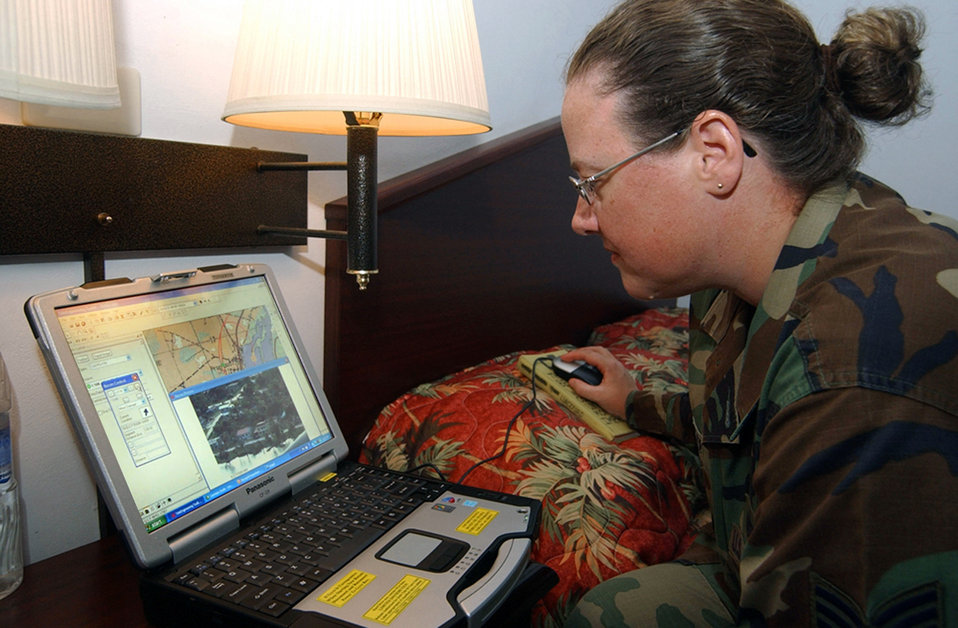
Assessment team arrives in Belize

Tech. Sgt. Heather Prater reviews the video captured after flying on a survey mission to assess damage in Belize City, Belize, caused by Hurricane Dean Aug. 21. Sergeant Prater is here with approximately 20 U.S. Soldiers and Airmen serving on an initial assessment team following the landfall of the hurricane. She is a civil engineer deployed from Fairchild Air Force Base, Wash.